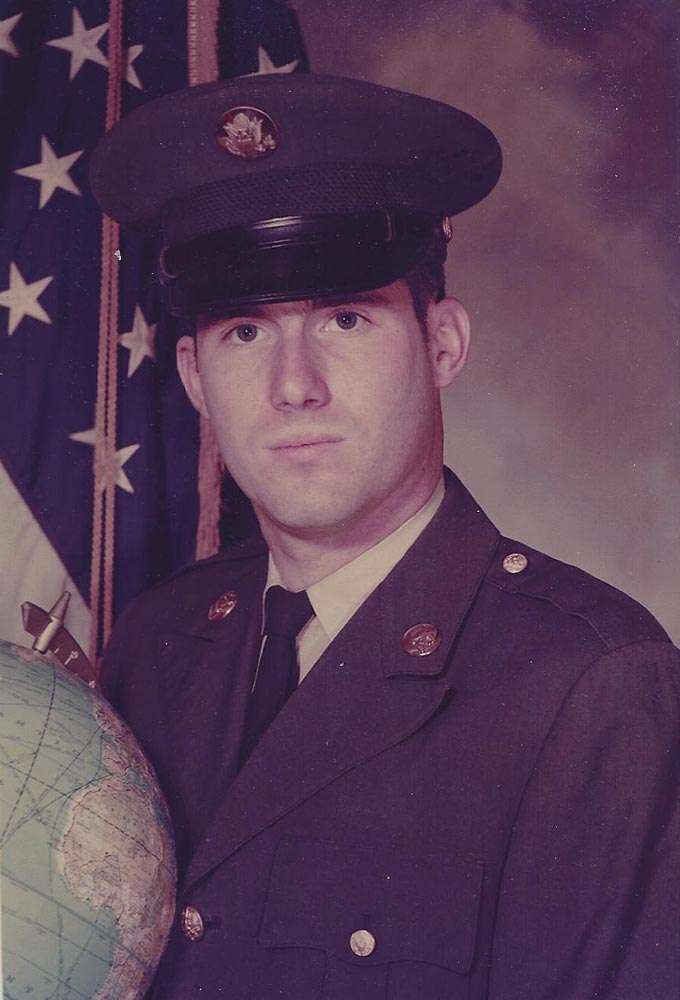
Chuck Houghten, a Division Chief for the Pacific Region's National Wildlife Refuge program, heading up Conservation Planning, Visitor Services and Transportation, was drafted into the Army and served on active duty from November 1972 to September 1974. He was honorably discharged in November 1978. He spent his entire tenure with the Army at Fort Knox, Kentucky, and became an Instructor in the Clerical School at the rank of Corporal. He also served as a Battalion HQ company clerk - for the 544th Supply and Service Battalion - as a Specialist 4th Class. After his service, he returned to college at Western Michigan University with a degree in Public Administration and then a master’s degree in Landscape Architecture and Environmental Planning at Utah State.